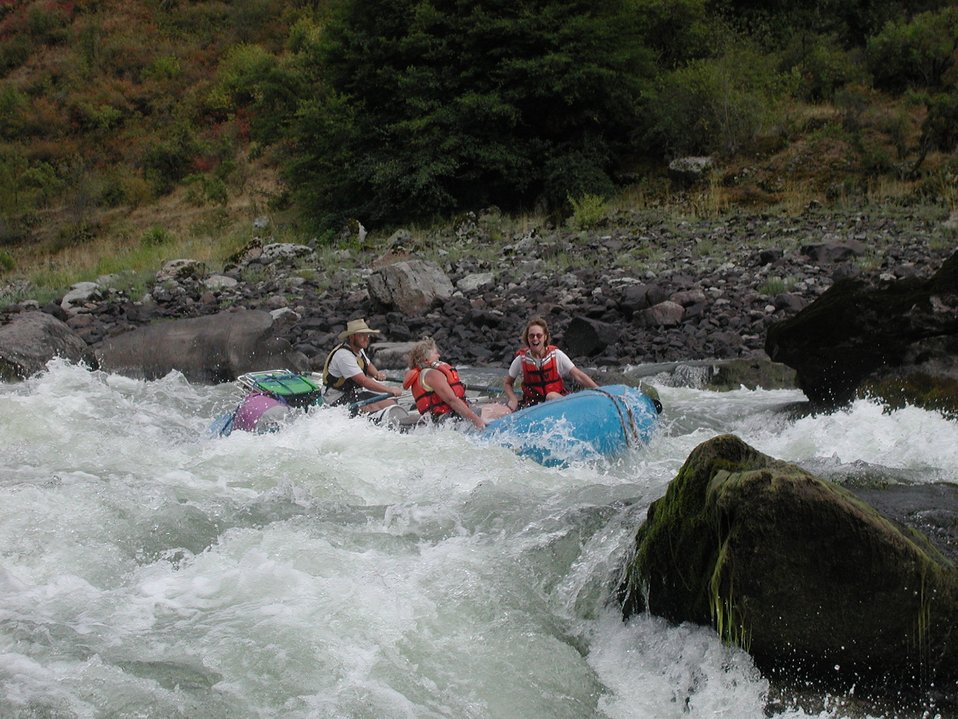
Recreation Rafting on Lower Salmon River Cottonwood Field Office UCSC Upper Columbia Salmon Clearwater District